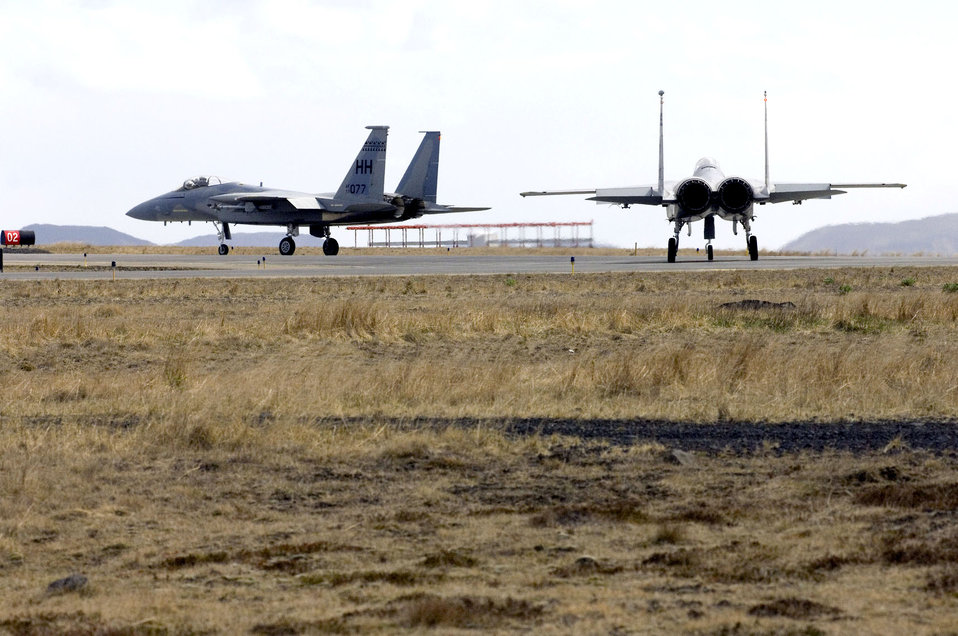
Drawdown at Keflavik

F-15 Eagles wait to take off from Naval Air Station Keflavik, Iceland, on Monday, May 22, 2006. Airmen and Sailors are reducing operations after more than 50 years of U.S. presence at the base. The F-15s and crews are from the Hawaii Air National Guard's 154th Fighter Wing at Hickam Air Force Base.